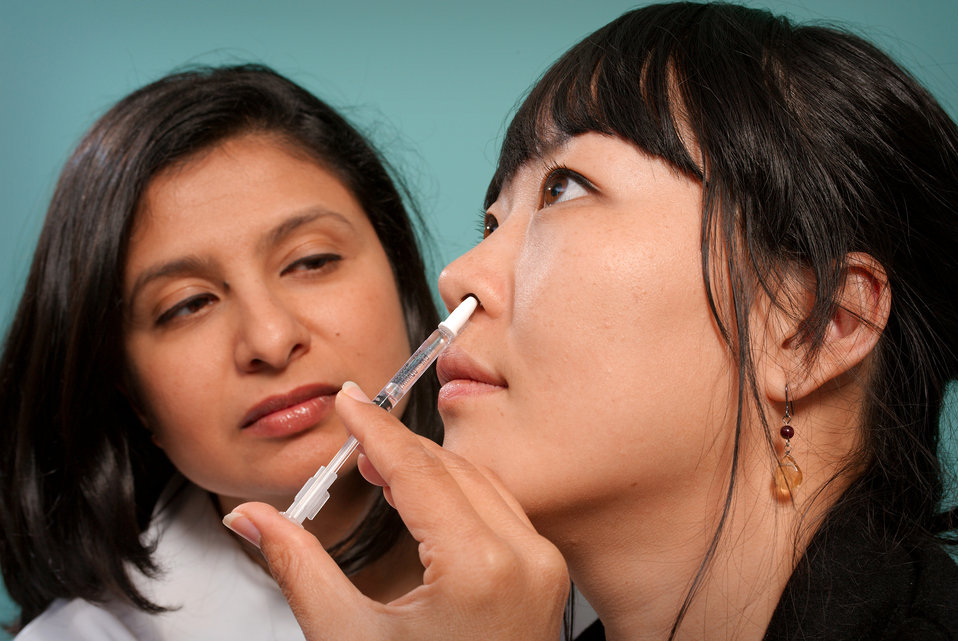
This 2009 image depicts a healthcare practitioner as she was administering the H1N1 live attenuated intranasal vaccine (LAIV) to an Asian woman. Using a small syringe, she was delivering the vaccine mist into the woman's left nostril.